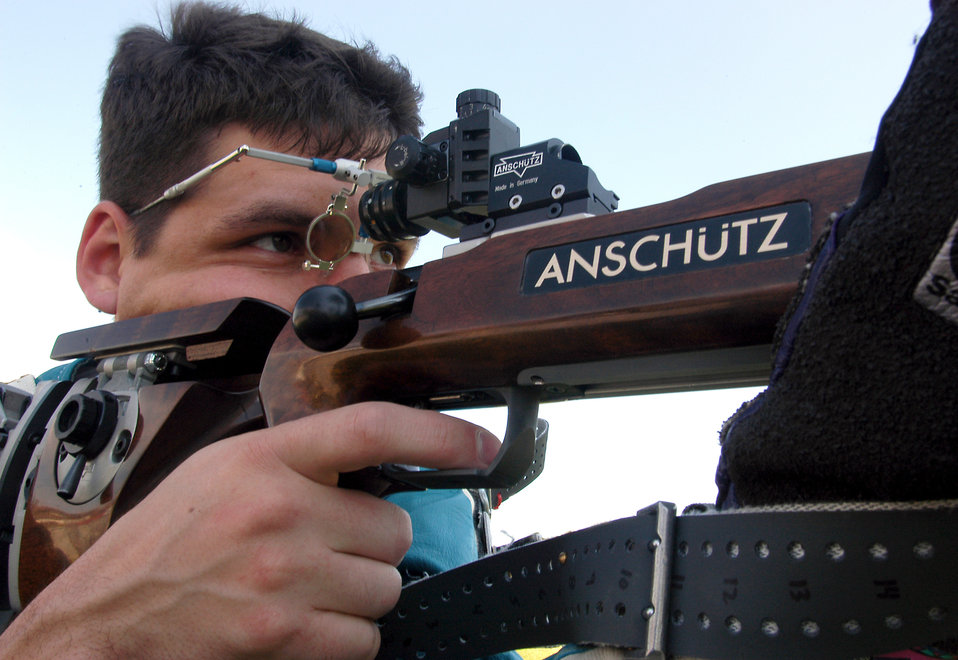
Shooting practice

LOS ANGELES AIR FORCE BASE, Calif. -- Capt. Mark Gould aims an Anschutz 2013 rifle during shooting practice. In competition, he shoots with an Anschutz 1913 Super Mach priced around $2,700 for just the rifle, going up to $3,150 with the sights included. He is captain of the Air Force International Rifle Team and assigned to the Space and Missile Systems Center's space superiority system program office here.